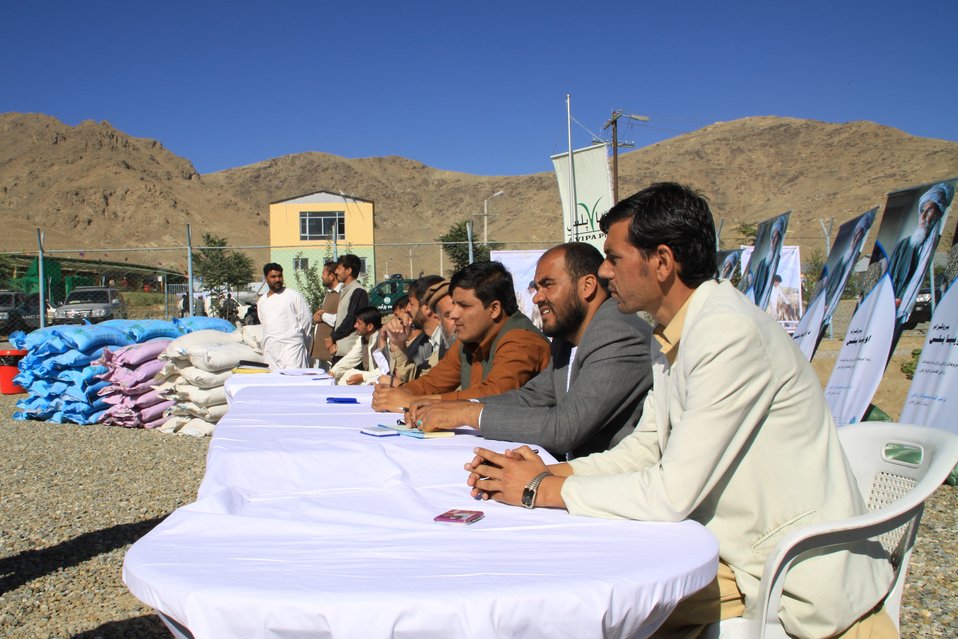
AVIPA Plus Wheat Seed Distribution 101005